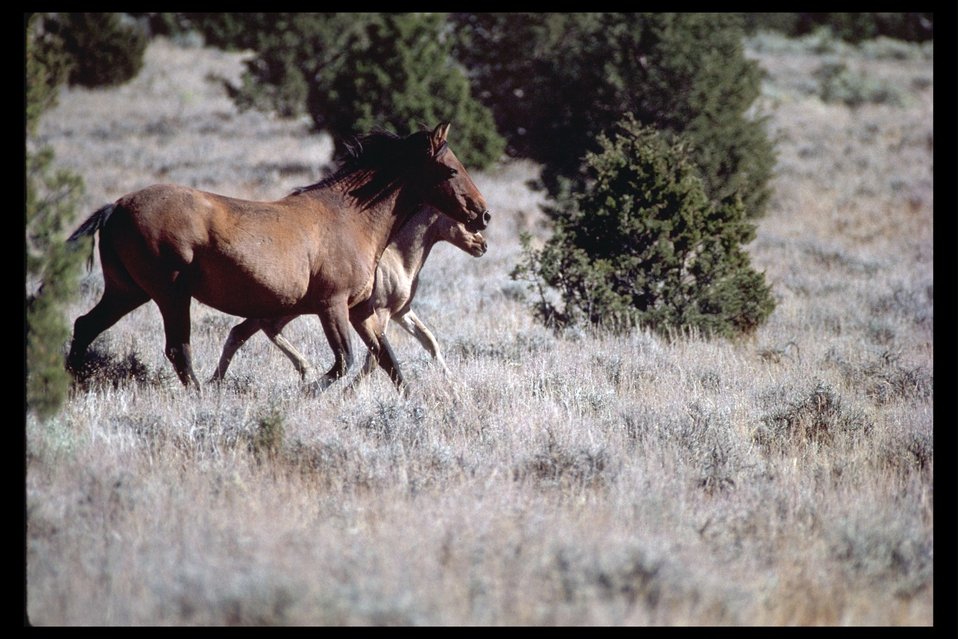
Kiger mustang on Kiger HMA.